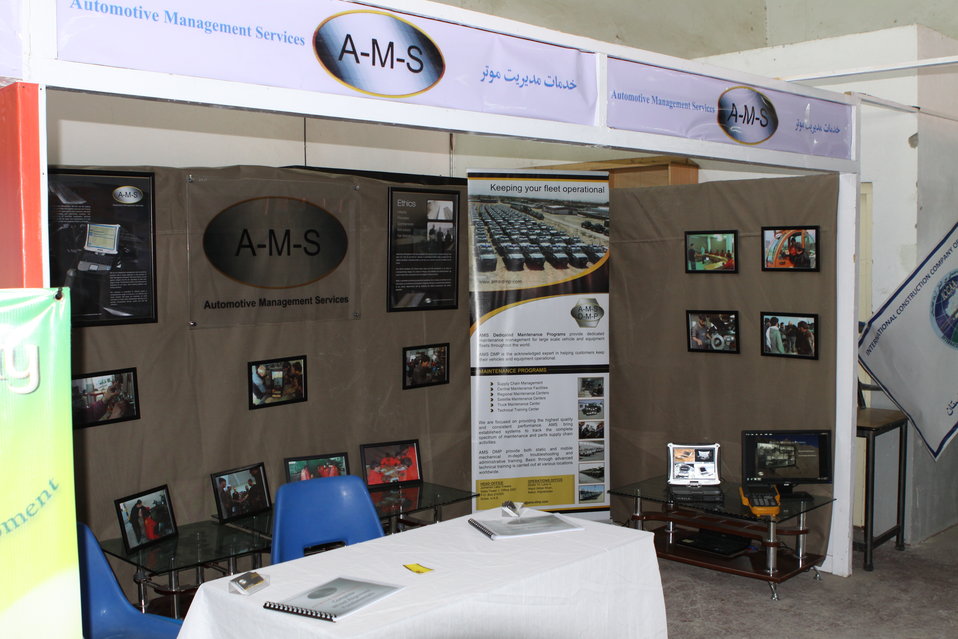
100522 ATVI Graduation 079